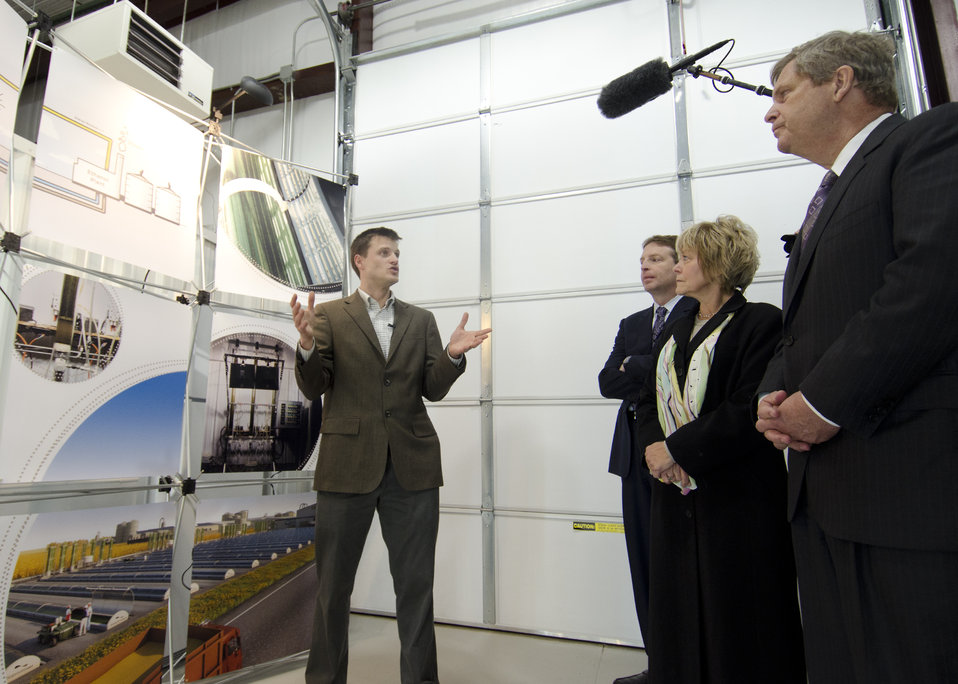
BioProcess Algae Senior Scientist Toby Ahrens of the Green Plains Renewable Energy (GPRE), Inc. (GPRE) explains the BioProcess Algae process to Agriculture Secretary Tom Vilsack and his wife Christie during their tour of the facility on Friday, Apr. 15, 2011. This operation is co-located within GPRE’s ethanol factory where BioProcess Algae technology is used to treat waste products, carbon dioxide, recycled heat and water to mass-produce algae. Algae from this facility are used for animal feeds, pharmaceutical and beauty products.